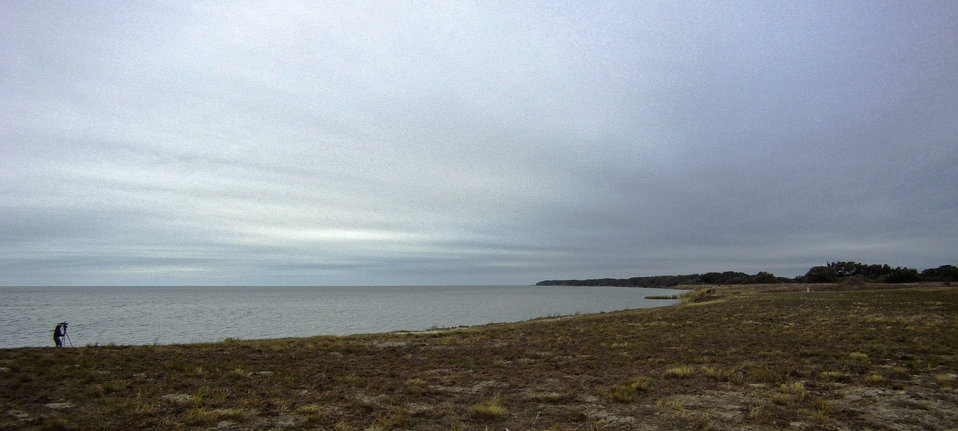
U.S. Department of Agriculture (USDA) Natural Resources Conservation Service (NRCS) videographer Bob Stobaugh captures the afternoon light and clouds over San Antonio Bay, from the shore of Aransas National Wildlife Refuge, in Austwell, TX, on Friday, Dec. 16, 2011. The Aransas Refuge is a 15,000-acre wildlife sanctuary established in 1939. Its fresh water comes from the San Antonio River, which flows by the historic Alamo southeasterly towards the Guadalupe River at the estuary of San Antonio Bay, the primary body of water for the refuge. Phragmites reed grass stabilizes the shore while live oak provides deep root stabilization and a windbreak from off shore winds.